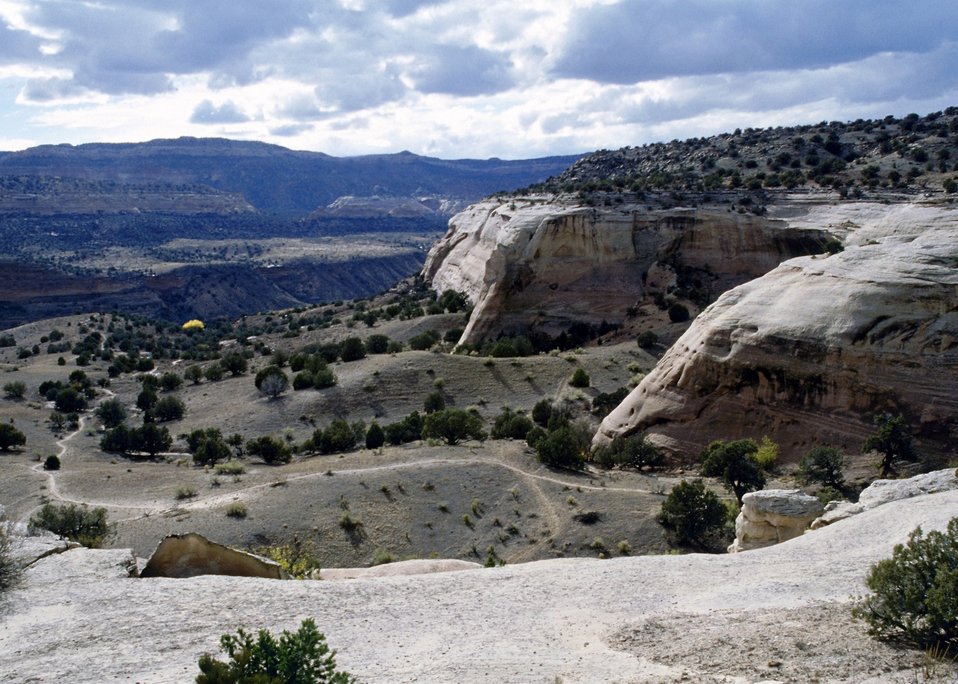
Mat Bike Trail